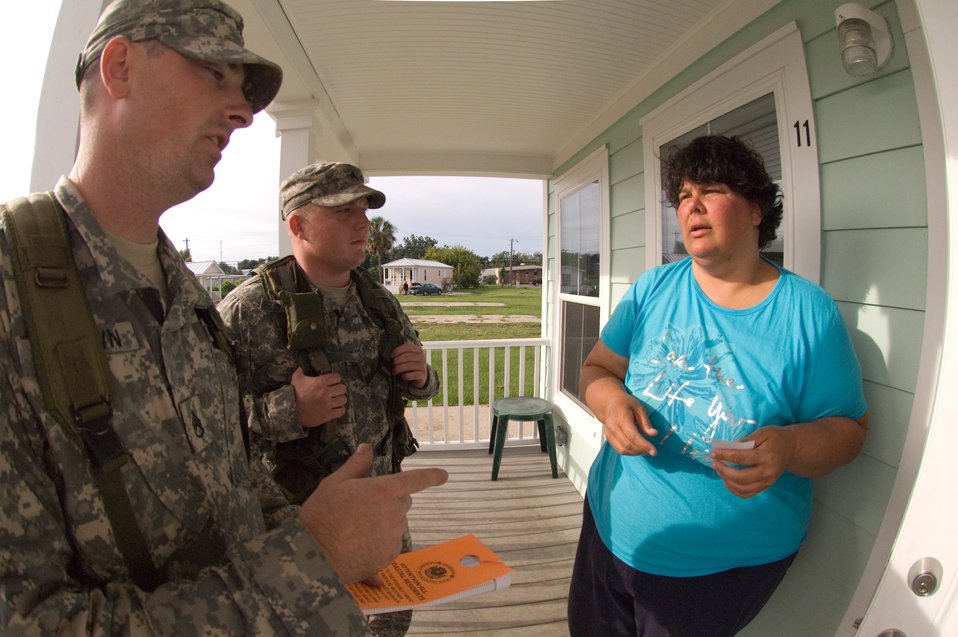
Army Guardsmen begin evacuation mission

Army National Guard Sgt Thomas Brown, right, and Staff Sgt Cory Brown, notify mobile home resident Charlotte Wright about a mandatory evacuation order in Gulfport, Miss. Aug. 31. All Federal Emergency Management Agency trailer residents in Gulfport are under a mandatory evacuation order in anticipation of Hurricane Gustav making landfall. Both guardsmen are from A Troop, 1-98 Cavalry Regiment, Pontotoc, Miss.